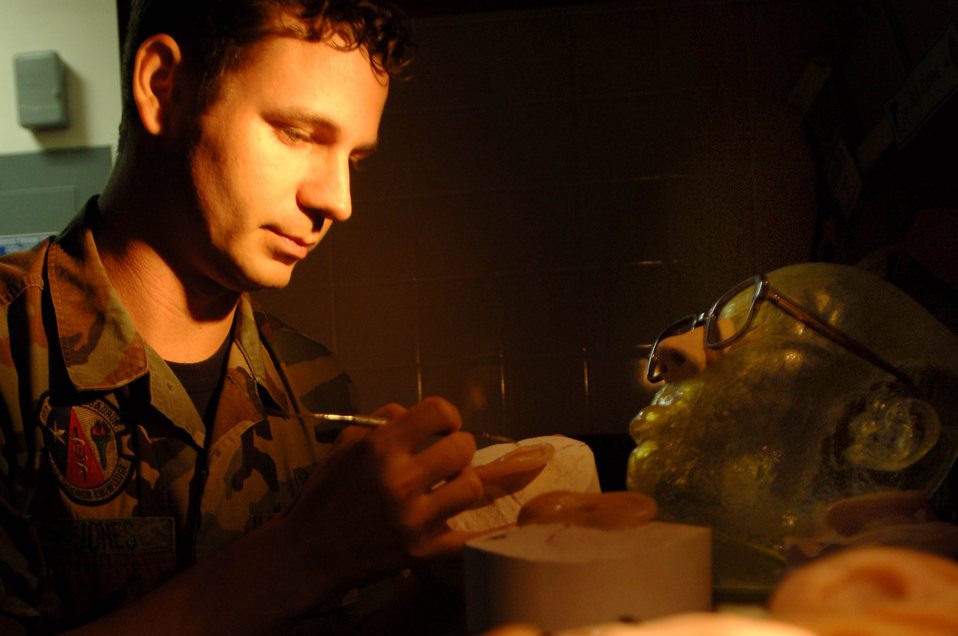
Airman helps injured warriors 'face' the world

Senior Airman Justin Jones creates a new ear for a patient using a model created by the stereolithography lab at MacKown Dental Clinic at Lackland Air Force Base, Texas. Airman Jones is a maxillofacial prosthetic technician assigned to the 59th Dental Squadron at Lackland AFB.